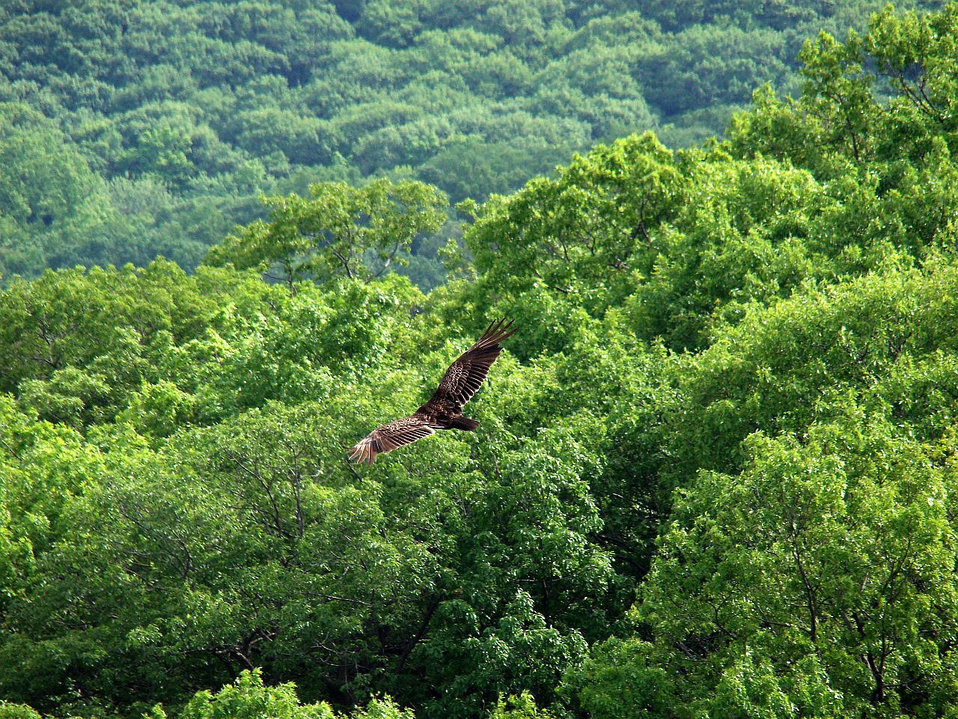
Hawk hunting.